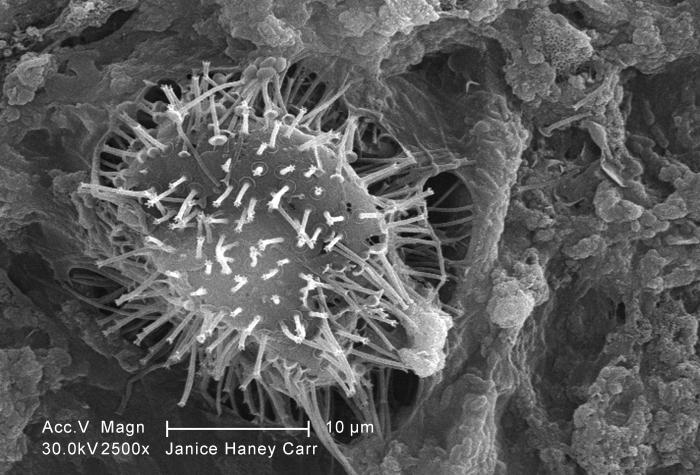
Under a moderately-high magnification of 2500X, this scanning electron micrograph (SEM) of an untreated water specimen extracted from a wild stream mainly used to control flooding during inclement weather, revealed the presence of unidentified organisms, which included bacteria, protozoa, and algae. In this particular view, a microorganism is featured, the exterior of which is covered by numerous projections imparting an appearance of a sea urchin. This microscopic 'pin cushion' was teathered to its surroundings by a biofilm within which many bacteria, and amoeboid protozoa could be seen enmeshed as well. See PHIL 11781 for a greater magnification of this organism's exterior. See PHIL 11789 for a colorized version of this image.